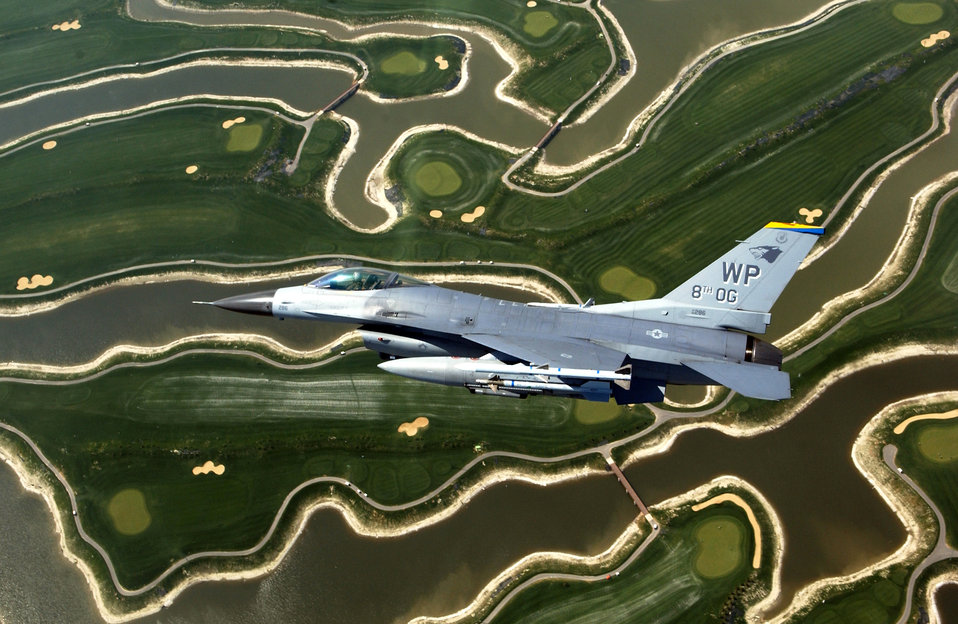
Falcons soar over South Korea

An F-16 Fighting Falcon from the 8th Fighter Wing at Kunsan Air Base, South Korea, flies near the base on Friday, April 28, 2006. The F-16 was flown by Col. Eric Best, 8th Operations Group commander.